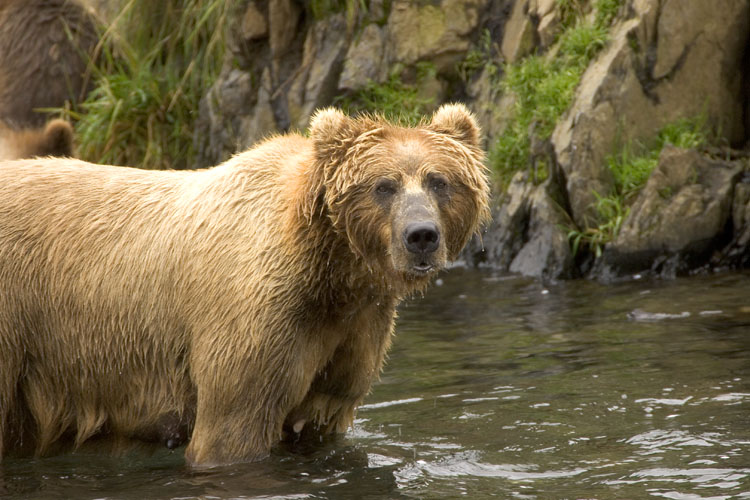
Wildlife of Kodiak Refuge